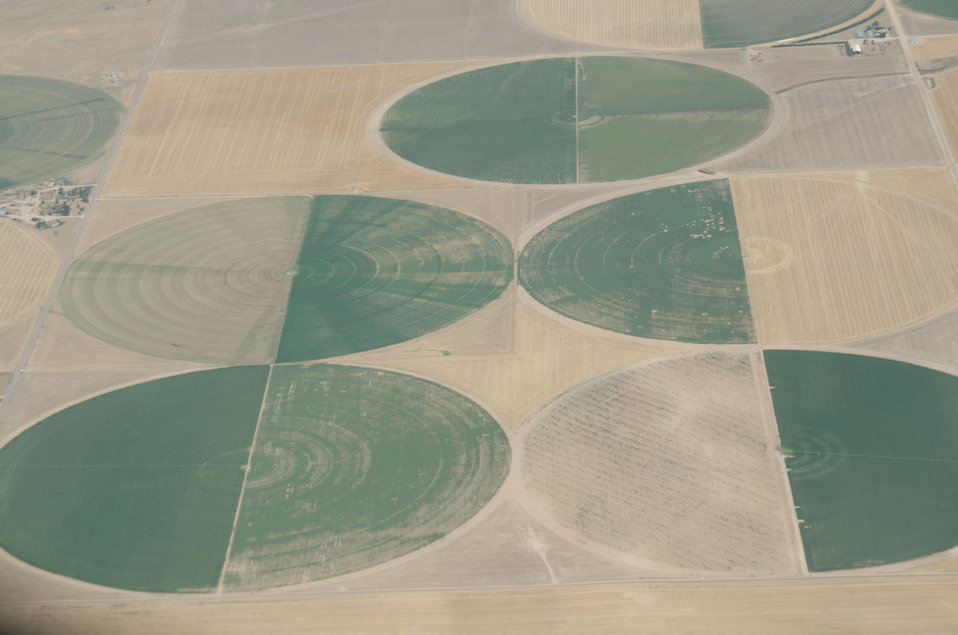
Aerial views of drought affected Colorado farm lands, 83 miles east of Denver, Colorado on Saturday, July 21, 2012. Green areas are irrigated, the yellow areas are dryland wheat crops.